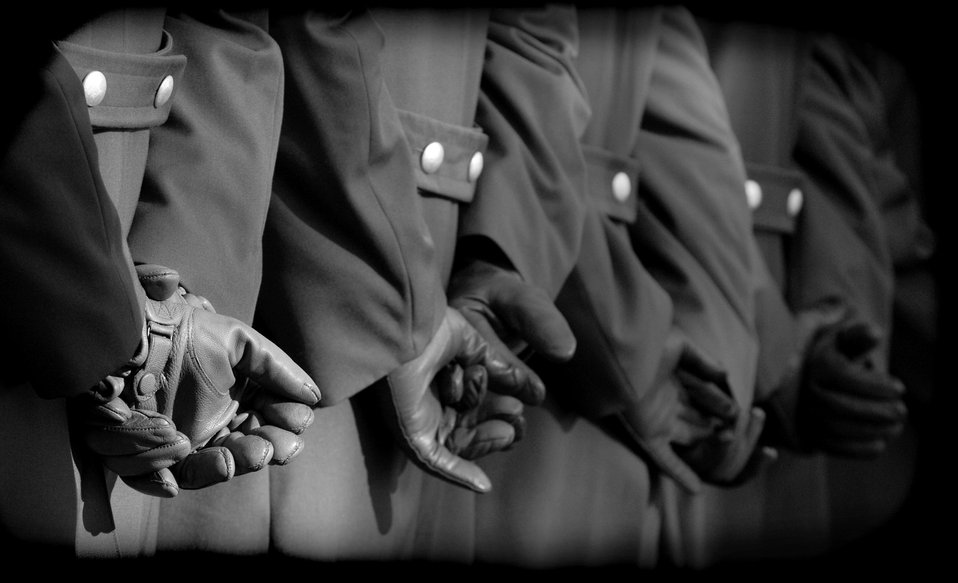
National Day of Mourning

German soldiers stand at parade rest during a ceremony for Volkstrauertag, or German National Day of Mourning, Nov. 11, 2010, at Bitburg, Germany. German and American servicemembers as well as firefighters, police and government officials from the local area participated in the ceremony to remember victims of war and tyranny.